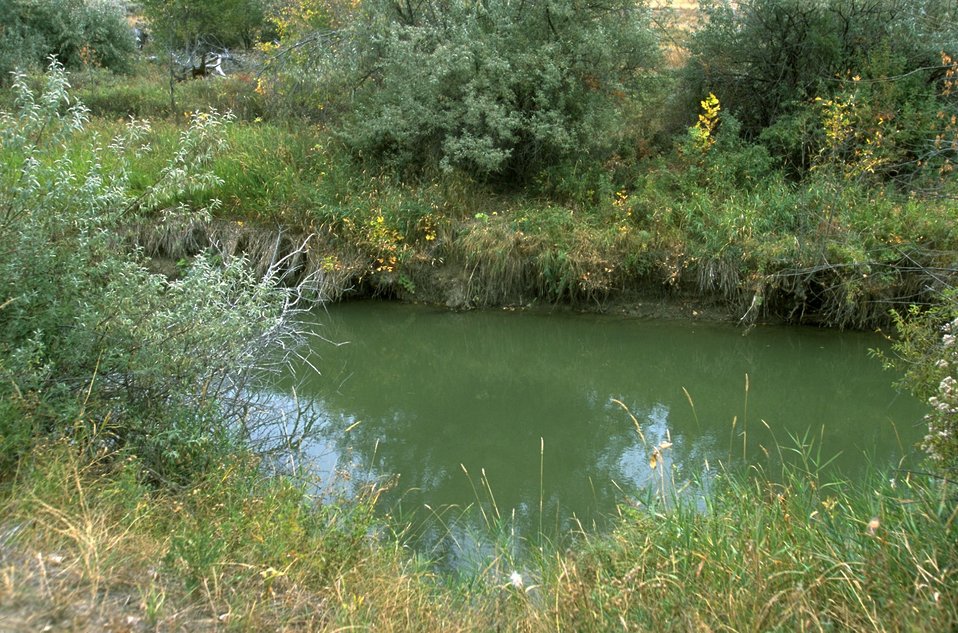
Yellowstone River channel on Howrey Island Nature Trail